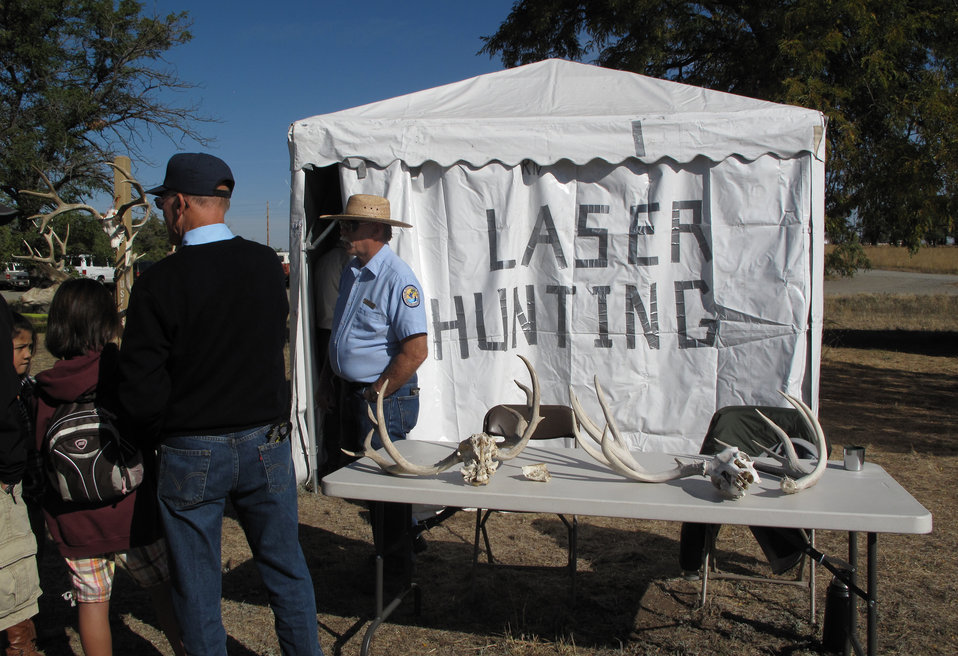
Refuge Round-up 2010

Laser hunting.